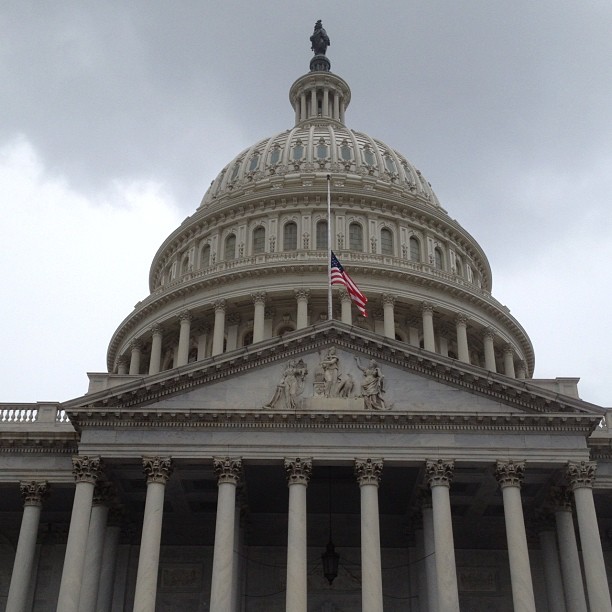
Capitol flag at half-staff as mark of respect for victims in Aurora, Colorado.